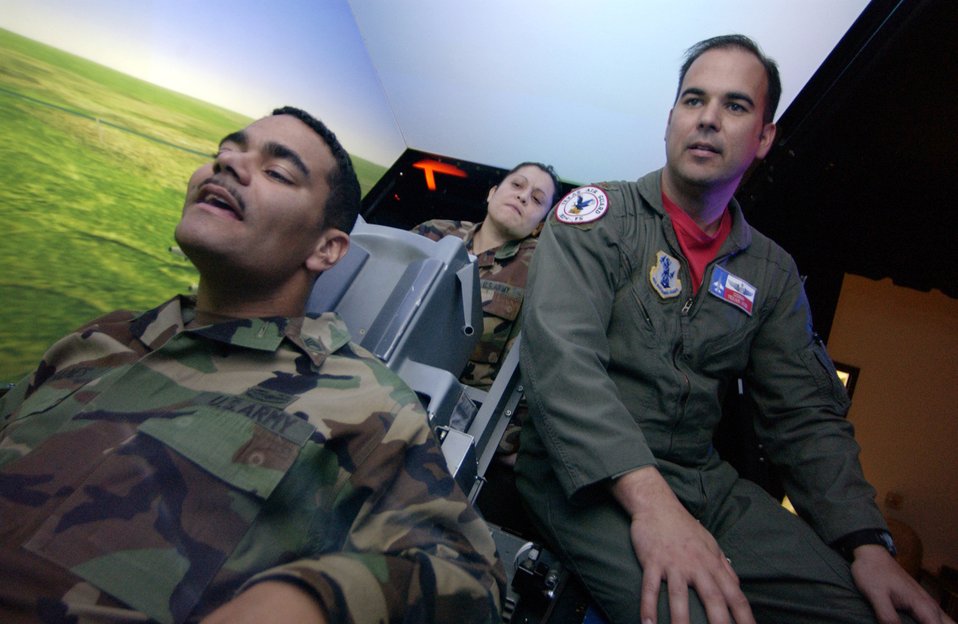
Shared experiences

SAN ANTONIO -- Army Staff Sgt. Jeffrey Gaines and Sgt. Manuela Fuentes get some stick time in an F-16 Fighting Falcon simulator with help from Maj. Ryan Jones, an F-16 Air National Guard pilot. The 56th Signal Corps soldiers met with 149th Fighter Wing pilots to learn how to communicate during deployments.